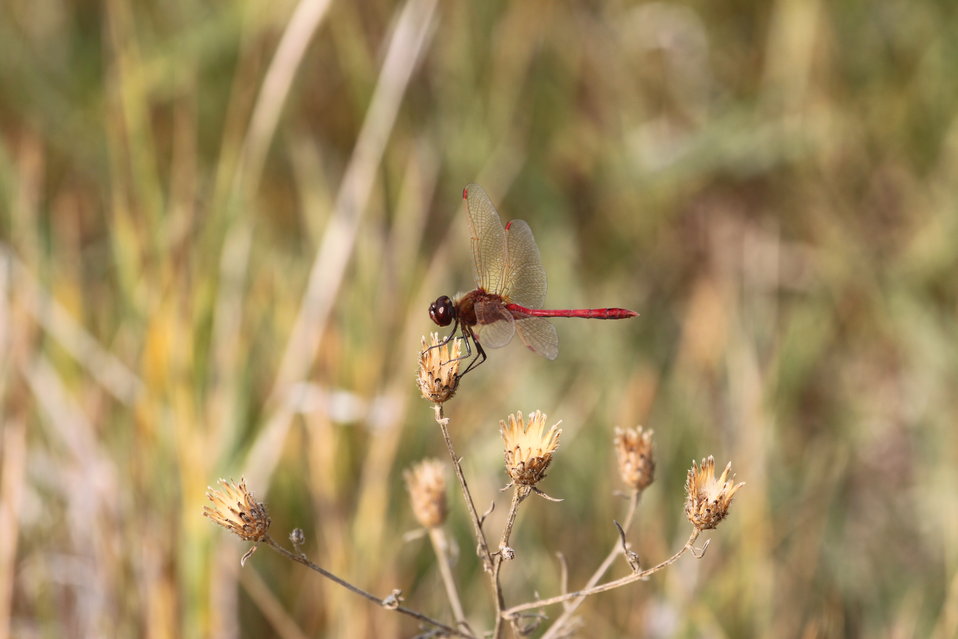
Saffron-winged Meadowhawk

Sympetrum costiferum, a most all red dragonfly that prefers Refuge wetlands with much emergent vegetation.